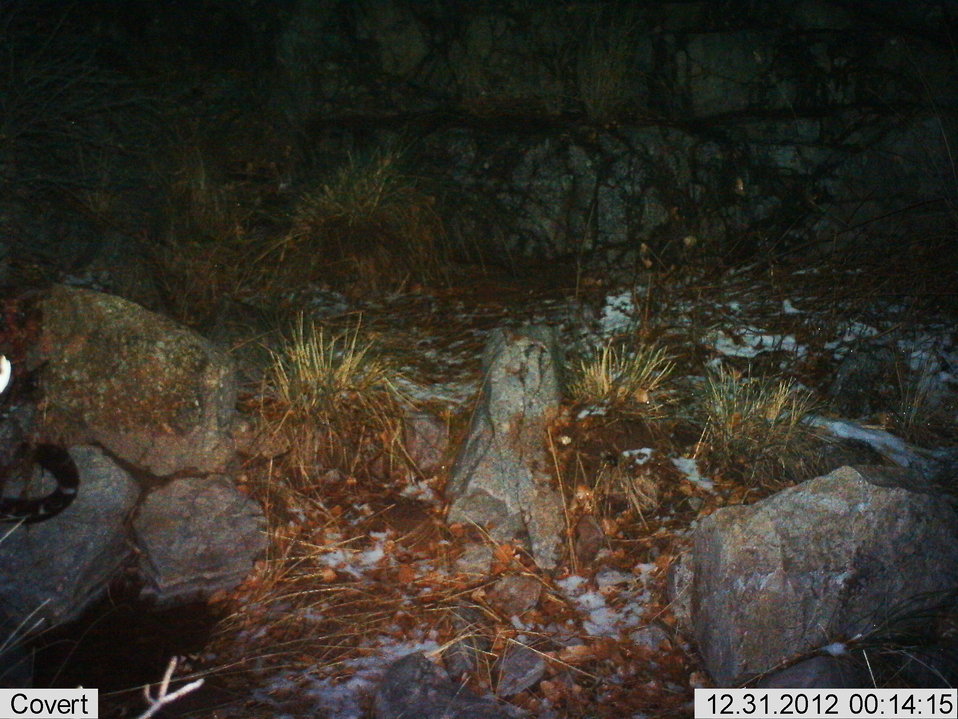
Male jaguar (tail tip only) photographed by automatic wildlife cameras in the Santa Rita Mountains on December 31, 2012, as part of a U.S. Fish and Wildlife Service/Department of Homeland Security-funded jaguar survey conducted by University of Arizona. One of three photos taken the same night in two different locations. (Same location as UA Jaguar 2012-12-31(0.12am).)